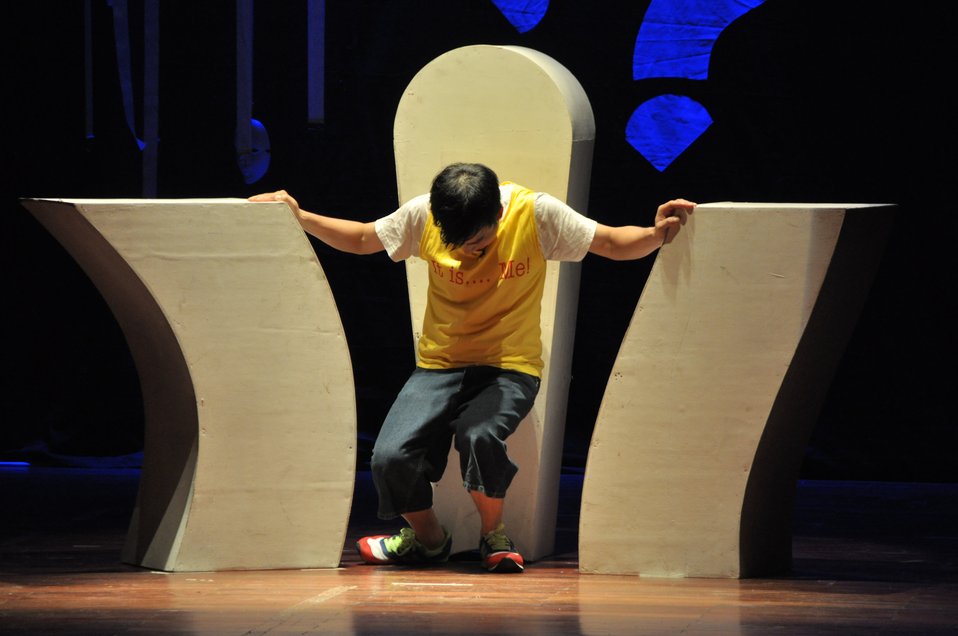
PEPFAR Musical Questions and Exclamations

Hanoi, May 17, 2013